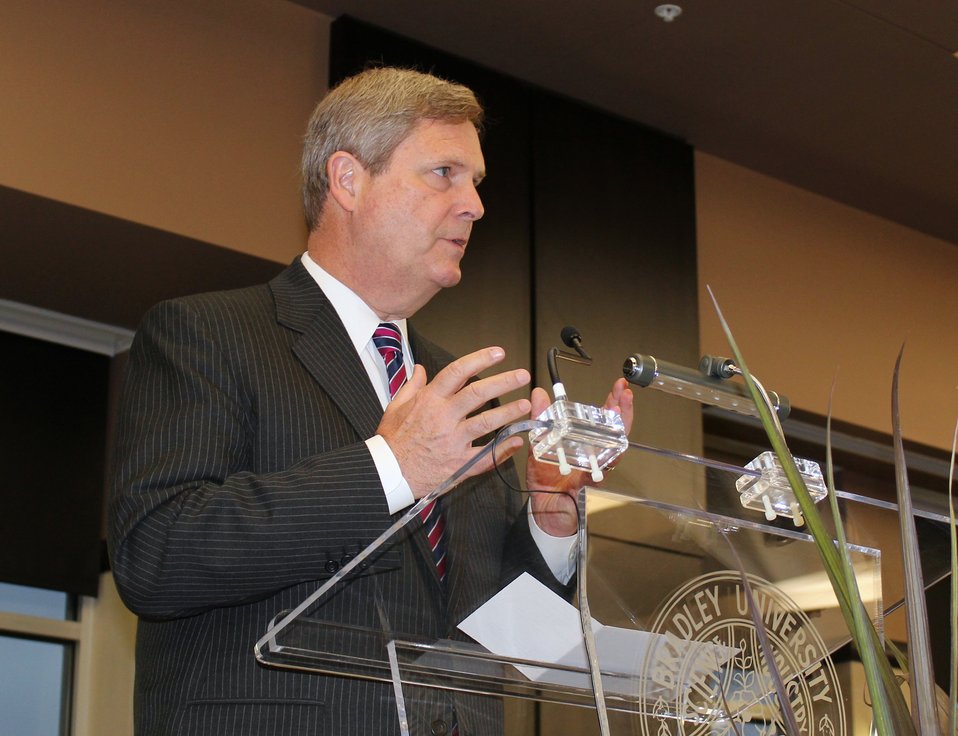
Agriculture Secretary Tom Vilsack keynote speaker at the “Future of Midwest Agriculture and Environmental Sustainability symposium at Bradley University in Peoria, IL, on Thursday, Nov. 3, 2011.